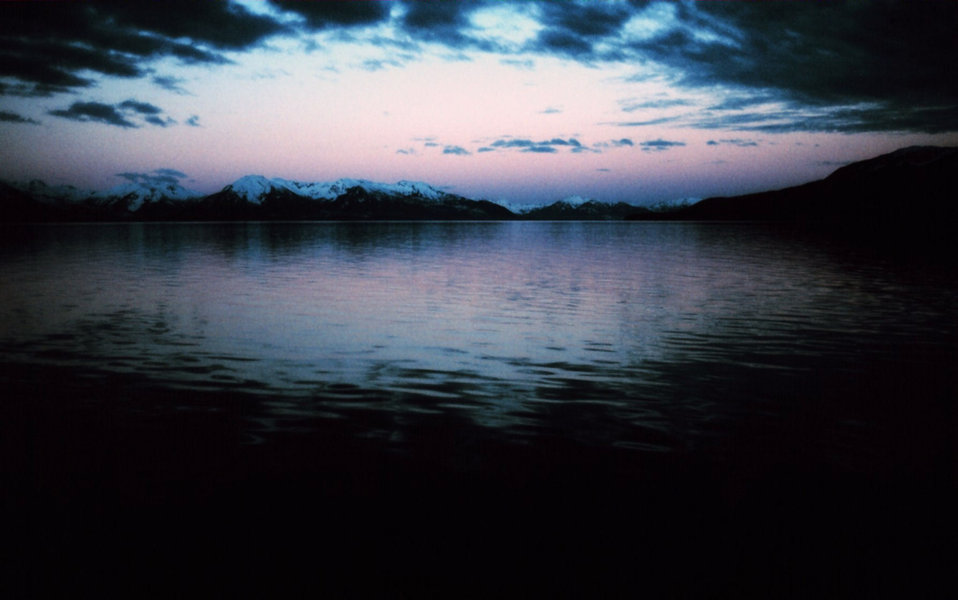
Sunrise at Cape Spencer